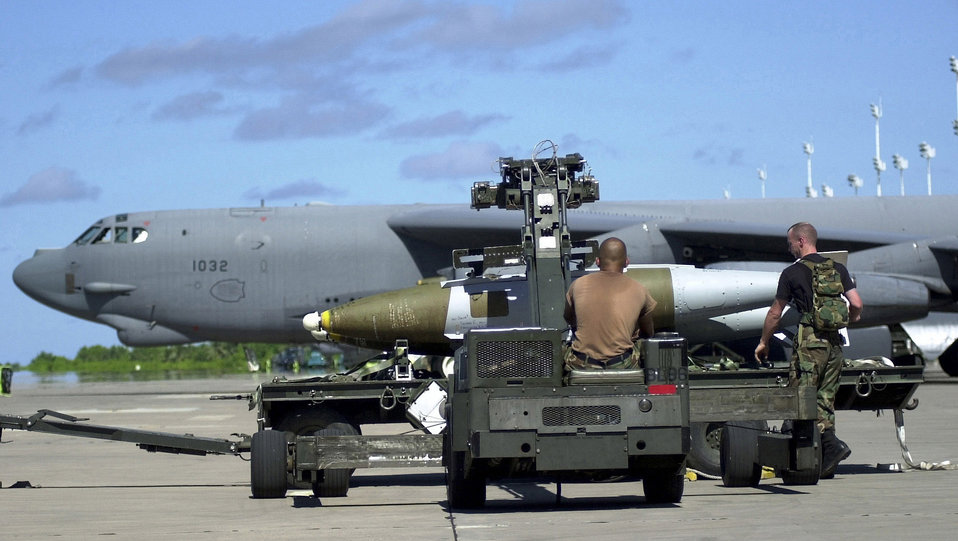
Load crew

OPERATION ENDURING FREEDOM -- Air Force munitions specialists from the 28th Air Expeditionary Wing download Joint Direct Attack Munitions from a B-52H Stratofortress at an operating location in support of Operation Enduring Freedom on Nov. 28. Coalition forces used about 110 strike aircraft against Taliban and al Qaeda forces Dec. 2. About 90 of those were tactical jet aircraft from sea-based platforms, about 12 to 14 were land-based tactical jets, and between eight and 10 were long-range bombers.